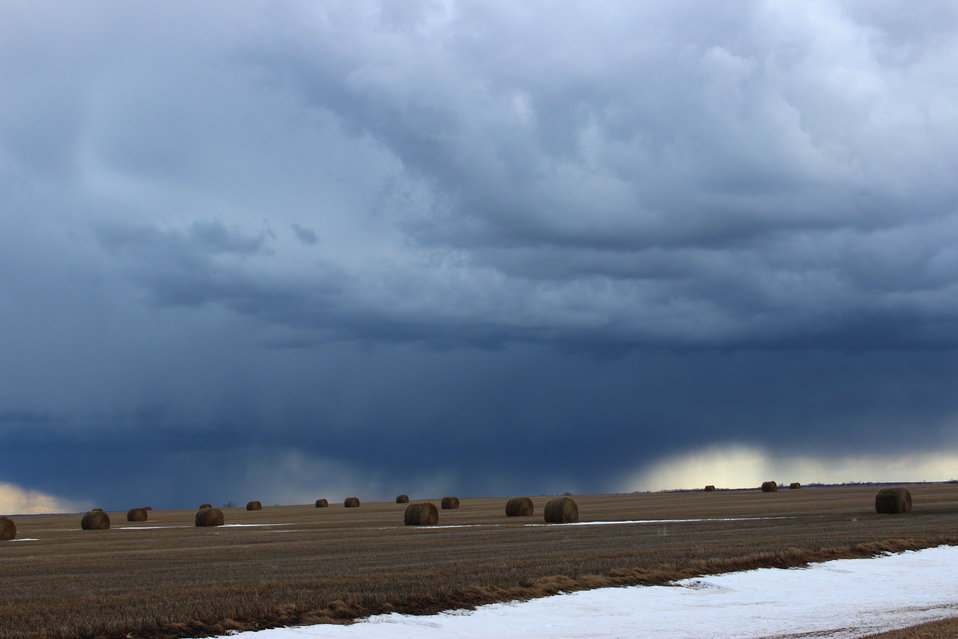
Showers over a Baled Field

An April rain shower makes a bold backdrop against the hay bales in this photo taken in Dickey County, North Dakota.